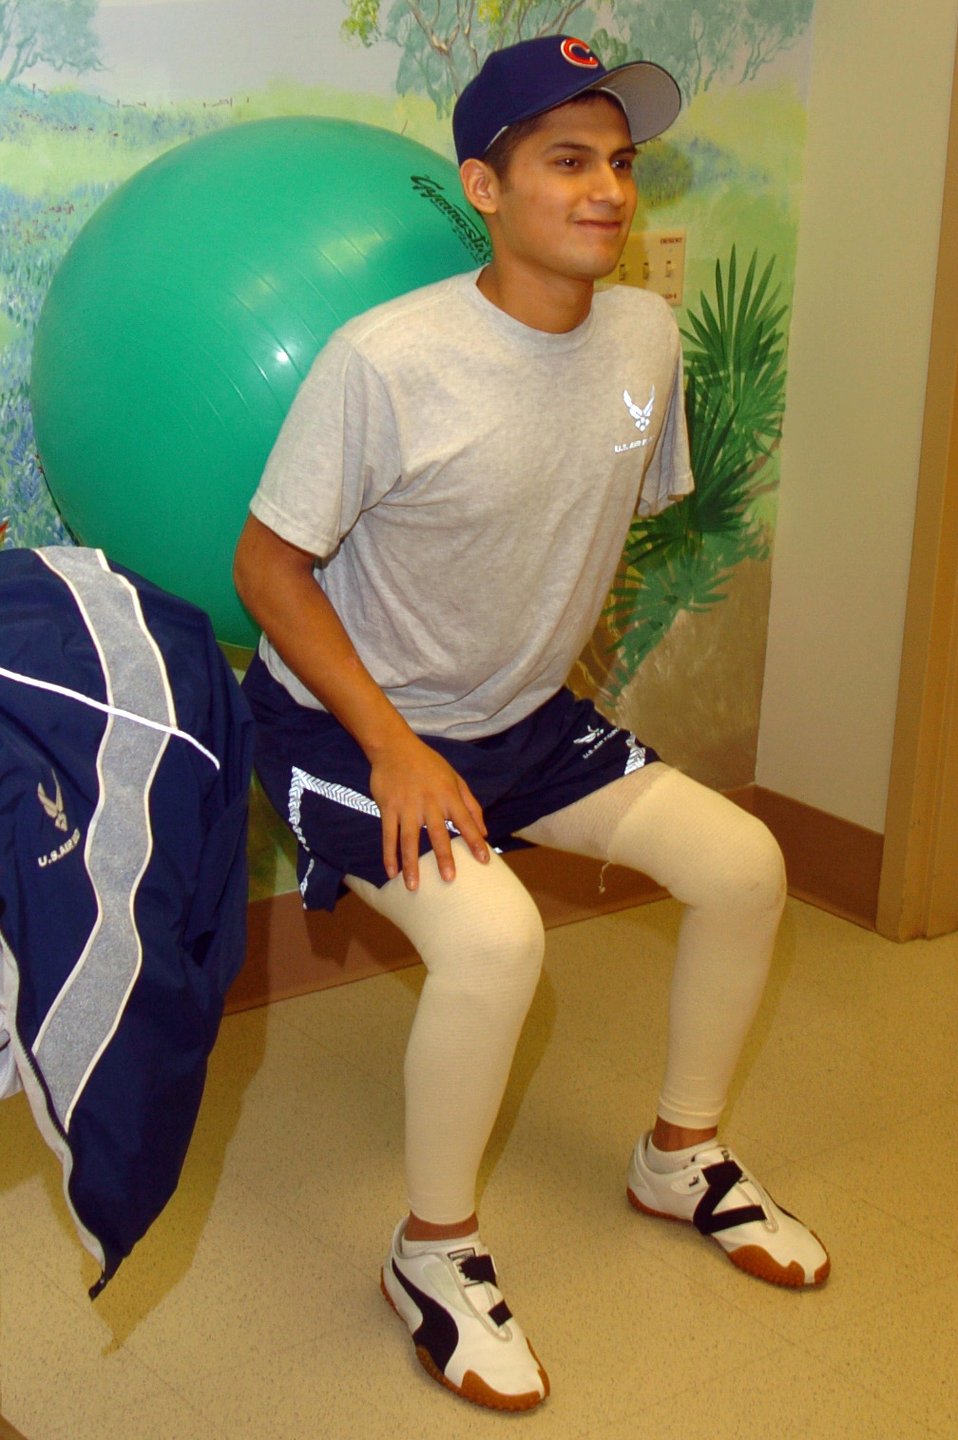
Airman wants to continue to serve

Senior Airman Dan Acosta uses an exercise ball to help him complete squats Thursday, Feb. 23, 2006, at the burn rehabilitation center at Brooke Army Medical Center in San Antonio.